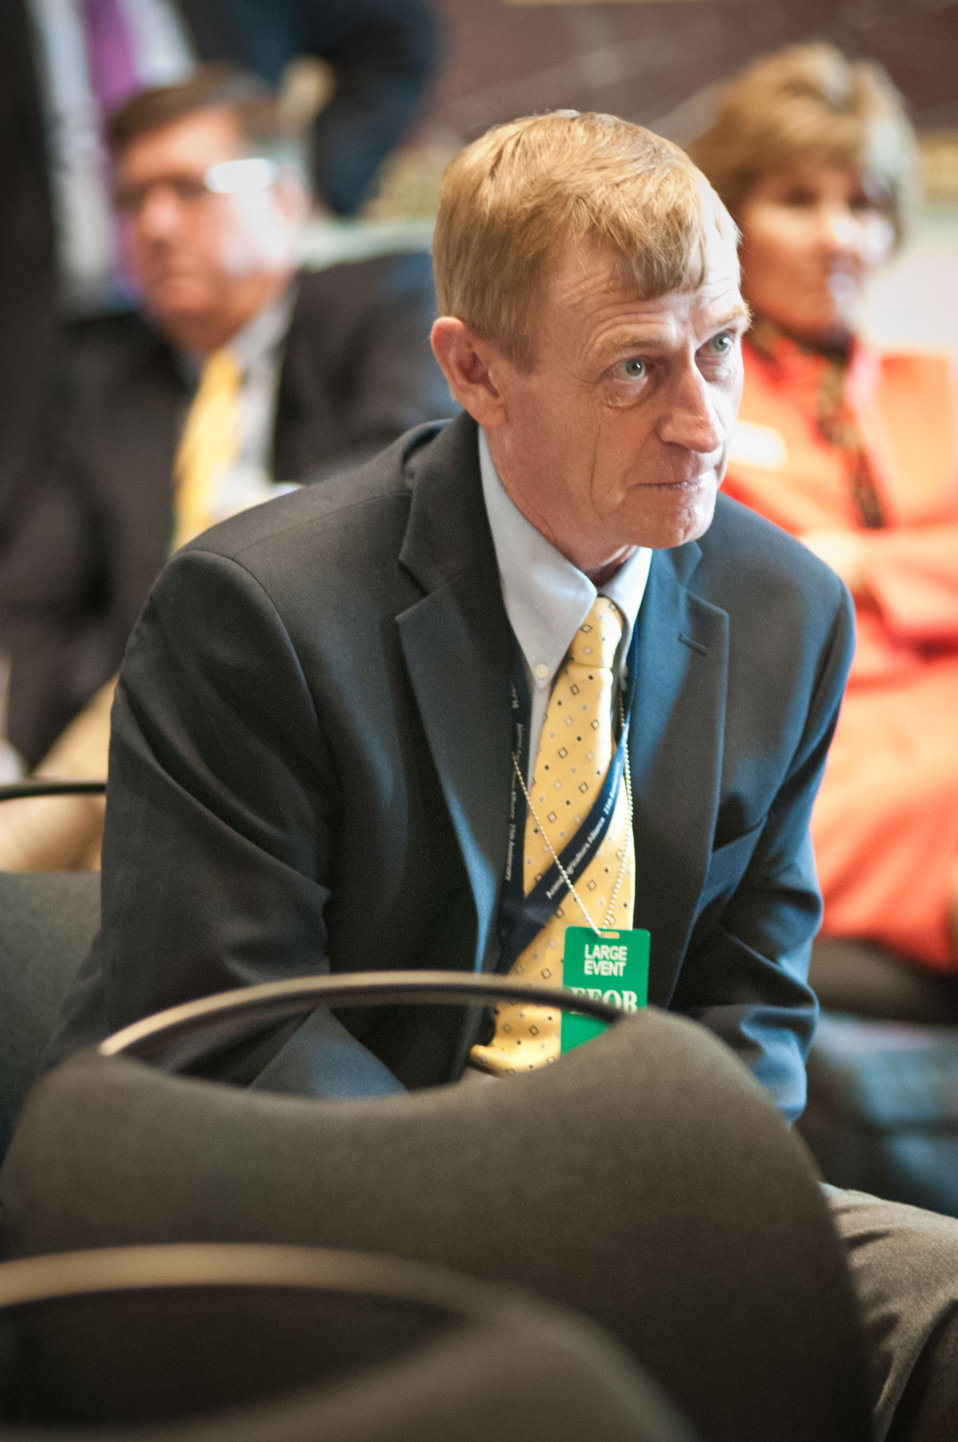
Roger Ward, WLDS Radio, Jacksonville, Illinois listens to Agriculture Secretary Tom Vilsack, United States Department of Agriculture officials and Obama Administration officials at the Spring National Association of Farm Broadcasters (NAFB), “Washington Watch” member retreat in Washington, D.C. This year the meeting was held in the Eisenhower Executive Office Building, Indian Treaty Room on Tuesday, April 24, 2012, featuring United Sates Department of Agriculture and Obama Administration officials. This opportunity provides an occasion to highlight efforts to rebuild and revitalize rural America, including efforts for the agricultural community. NAFB is the recognized and trusted source of agricultural and rural lifestyle information for America with approximately 200 members who broadcast via radio in nearly every state in the country.